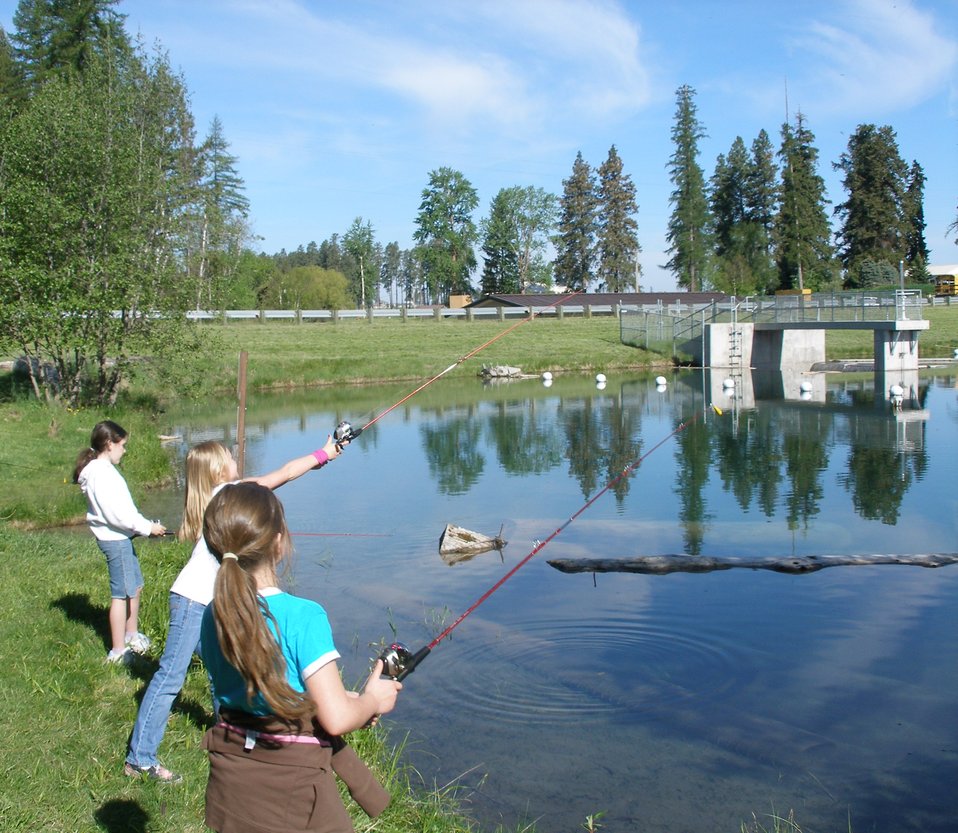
The Creston National Fish Hatchery, in association with the Flathead Community of Resource Educators (Flathead C.O.R.E.), holds an annual Fish Fun Fair to promote National Fishing and Boating Week.

Creston National Fish Hatchery invites 3rd graders from local schools to visit the hatchery and participate in learning stations, which may include fish anatomy, fish identification, fishing equipment and casting, hatchery tours, and other interesting exhibits with an aquatic focus.